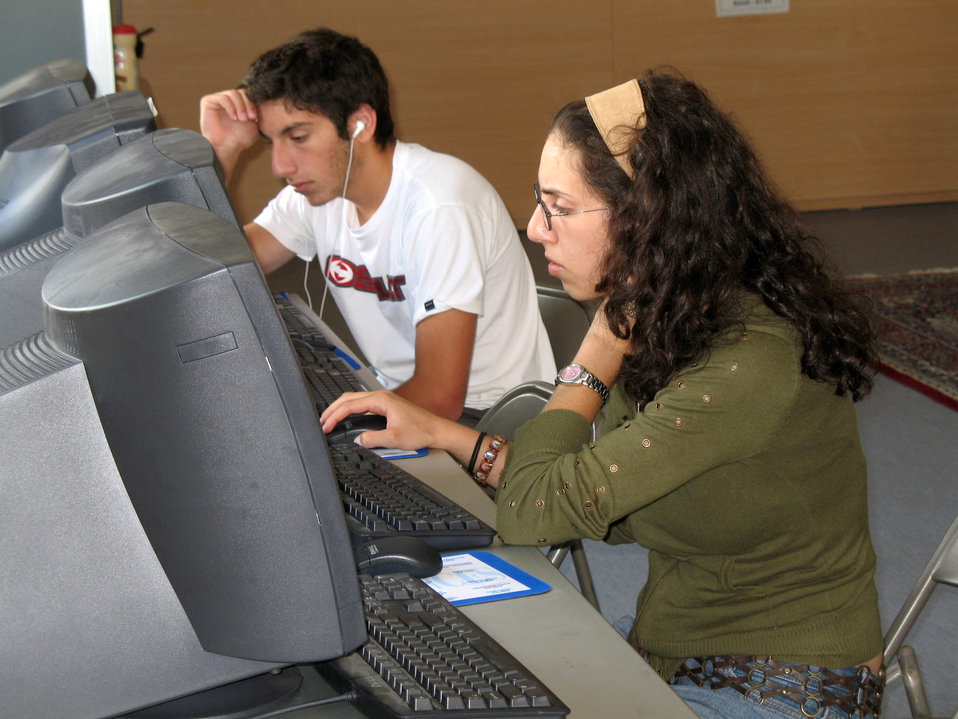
Care and comfort at Incirlik

American citizens who departed Lebanon surf the Web at the Patriot Village Community Center at Incirlik Air Base, Turkey, on July 22. The base has provided telephones, Internet service, television and other amenities to the displaced Americans while they wait to travel back to the United States.